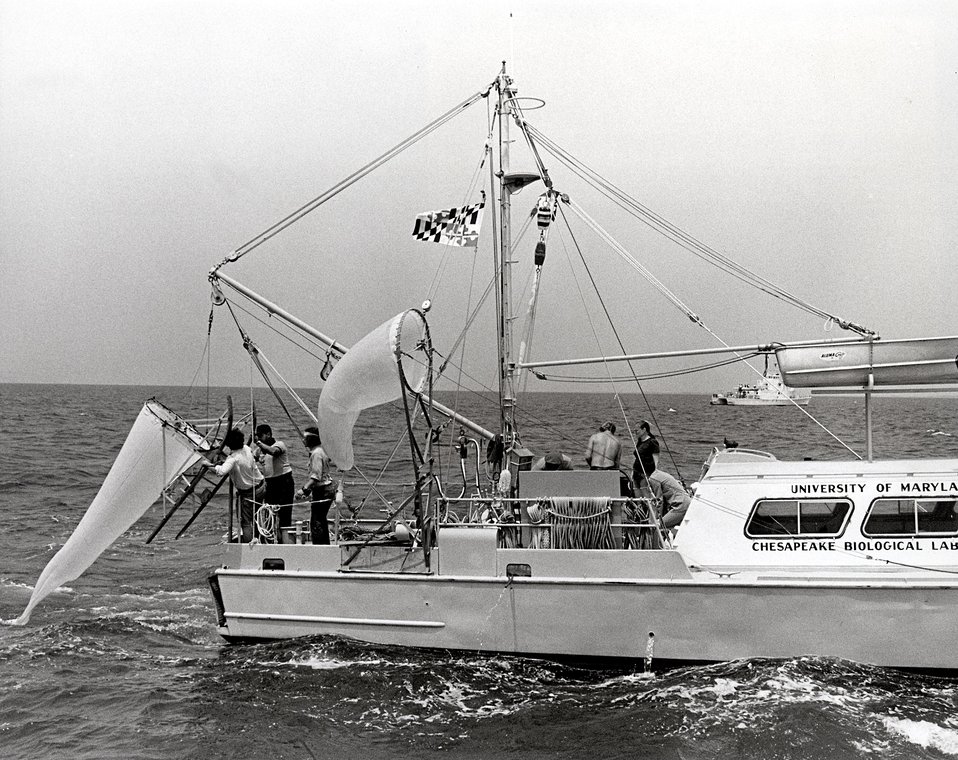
A scientific team aboard the University of Maryland research vessel, the Orion, gets ready to lower a plankton net as part of a research project designed to determine the possible effects of discharging waste heat from a nuclear electric generating plant into the Chesapeake Bay. Circa 1972.